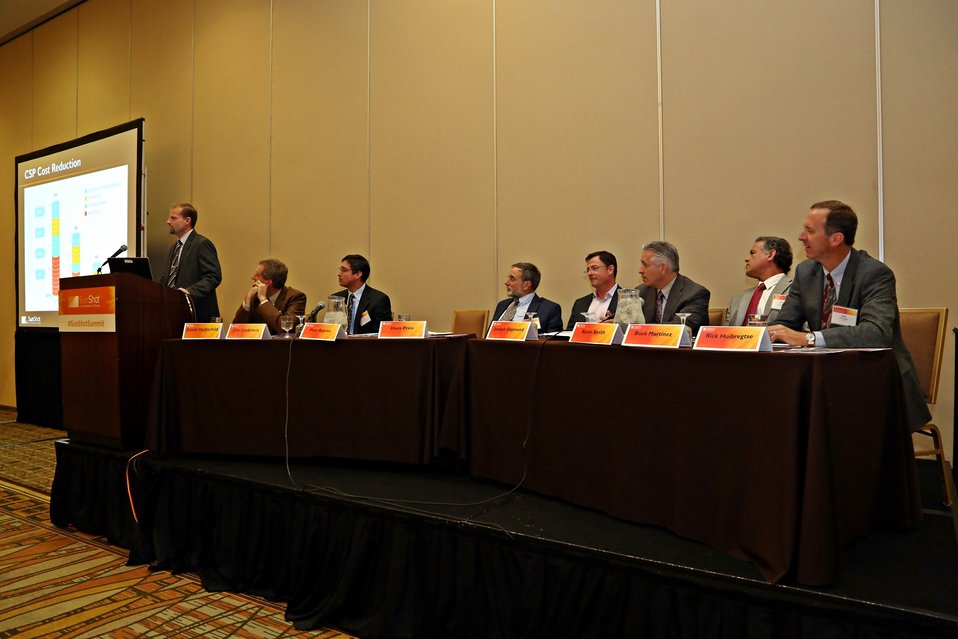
Breakout Sessions 10